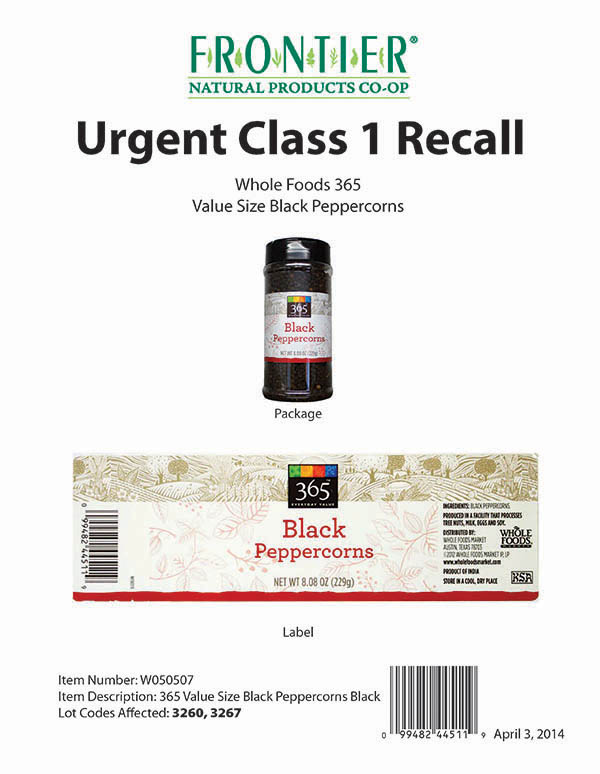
RECALLED – Organic Black Peppercorns

April 4, 2014 – Product Recall – Frontier Natural Products Co-op Initiates Voluntary Class 1 Recall Due to Possible Health Risk from Organic Black Peppercorns.